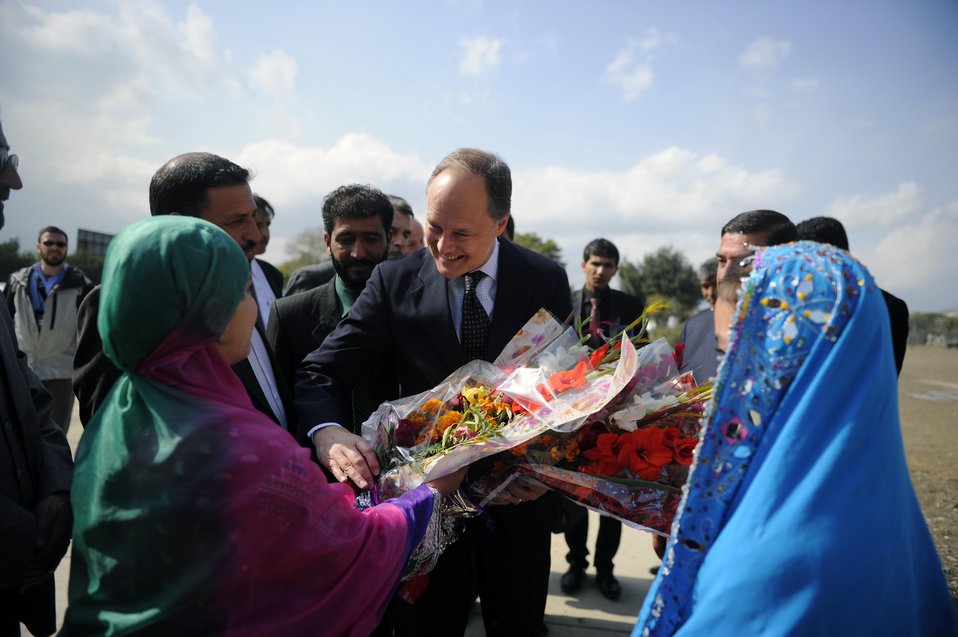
U.S. Deputy Ambassador James B. Cunningham receives a gift of fresh flowers from students in advance of the Ghazi School inauguration.

U.S. Deputy Ambassador to Afghanistan James B. Cunningham, Afghan Minister of Education Abdul Rahim Wardak and visitng former U.S. Ambassador to Afghanistan Zalmai Khalilzad officially inaugurated the newly rebuilt Ghazi High School in West Kabul October 23, 2011. Former alumni of the school include both Ambassador Khalilzad and Afghan President Hamid Karzai. The school was destroyed during 30 years of fighting in Afghanistan, and was refurbished by the U.S. Agency for International Development. (Department of State)